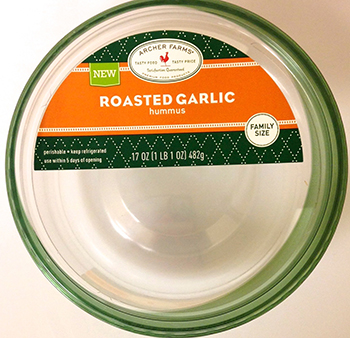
RECALLED – Hummus and dip products

May 19, 2014 – Product Recall – Lansal, Inc. Voluntarily Recalls Hummus & Dip Products Due to Possible Health Risk.